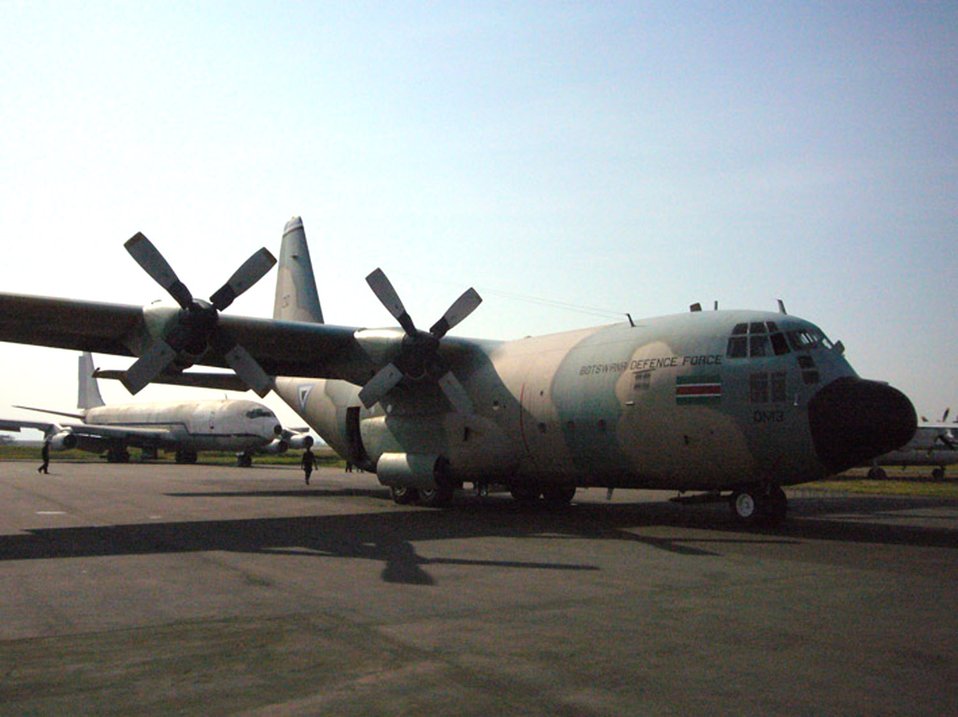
Ramstein flies with Botswana into Darfur

The Botswana Defence Force flew the C-130 Hercules with Ramstein Airmen in the Darfur region of Sudan Sept. 24, transporting dozens of Ugandan civil police into the region to support the African Union peacekeeping mission.